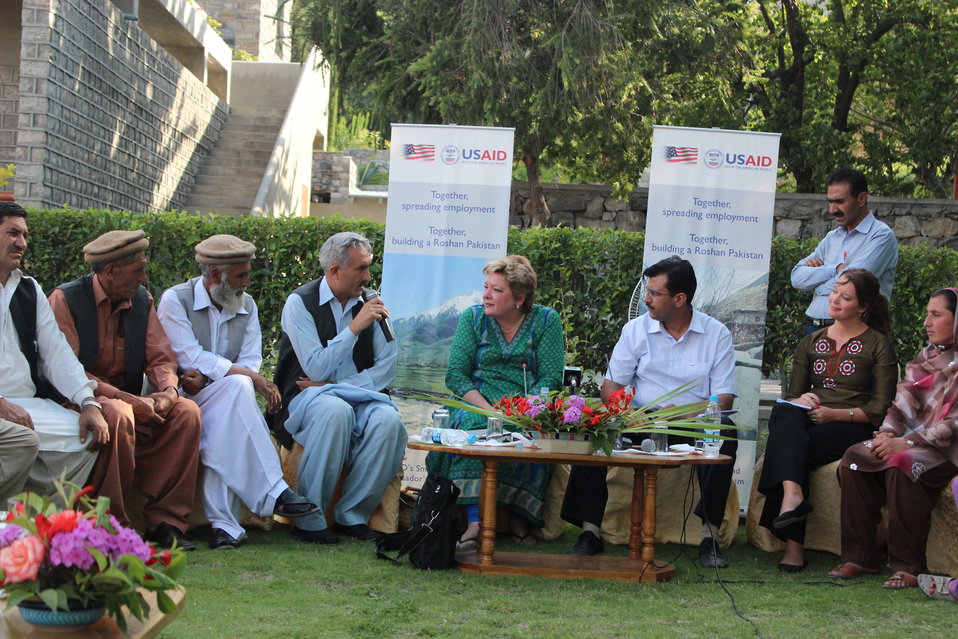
IUSAID Deputy Country Director Karen Freeman met with 6-8 beneficiaries from Gupis Rural Support Program

On Sunday, USAID Deputy Country Director Karen Freeman met with 6-8 beneficiaries from Gupis Rural Support Program to learn about their project funded by a USAID grant. The meeting took place at Serena Hotel in Gilgit.